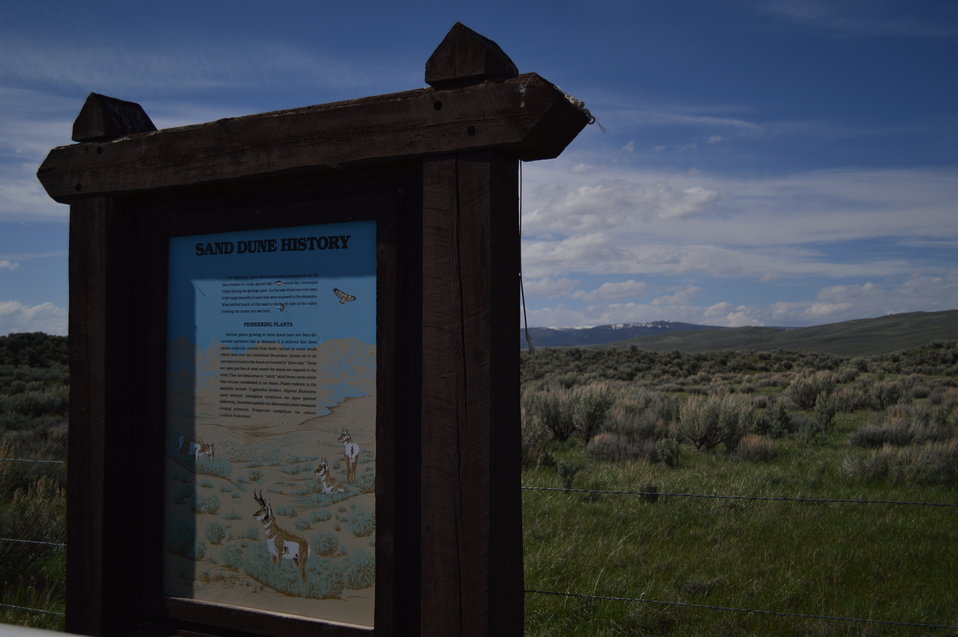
Regional Leadership Visit to Montana 2014